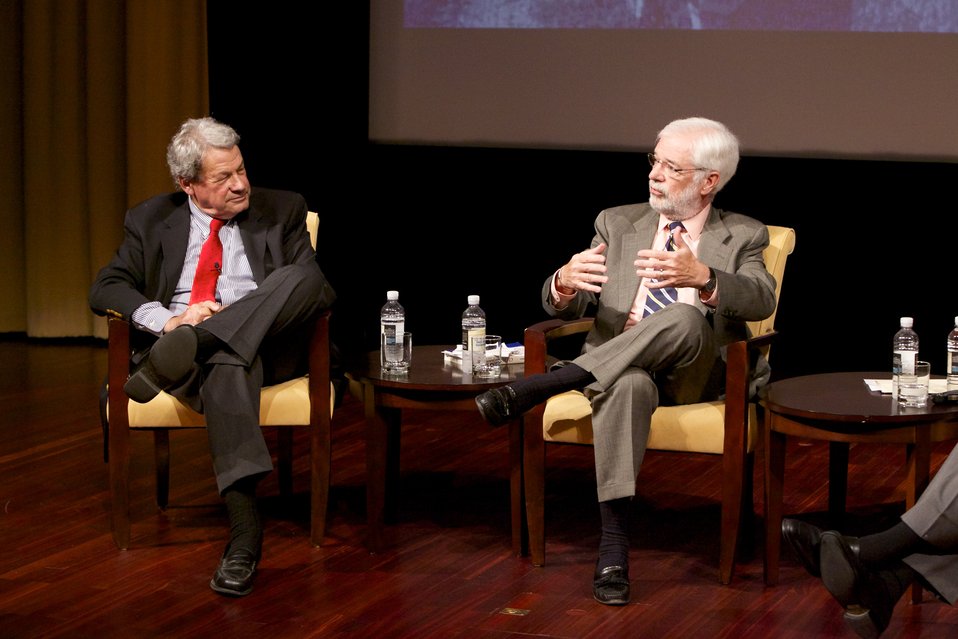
A Nation of Immigrants: How They Shaped America